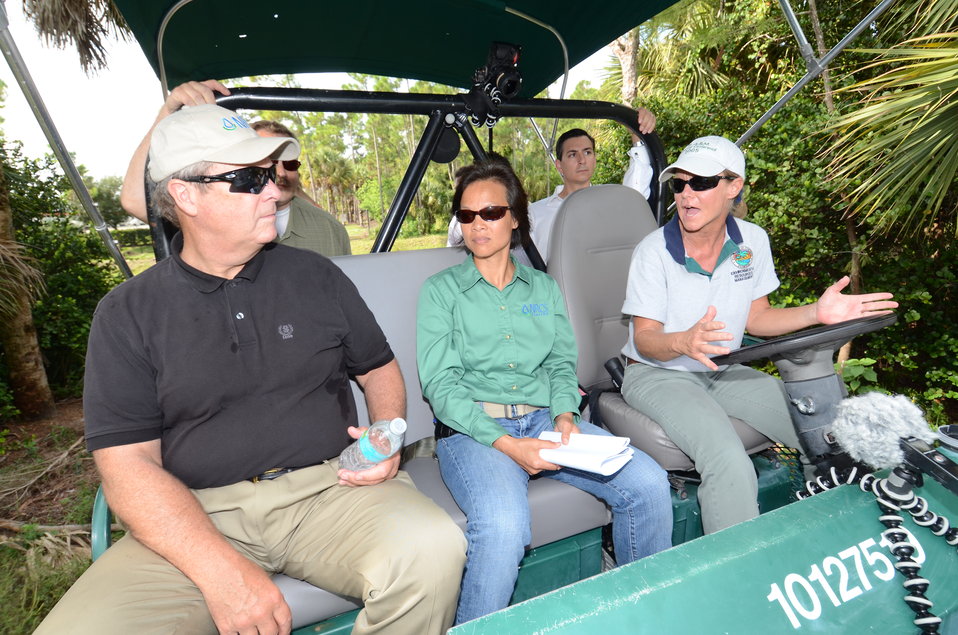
Agriculture Secretary Tom Vilsack rides along with USDA, National Resources Conservation Service Nga Watts and Palm Beach County Board of County Commissioners, Department of Environmental Resource Management, Natural Resources Stewardship Environmental Program Supervisor Brenda Hovde (driving) to see the Winding Waters Natural Area, FL, on Thursday, August 8, 2011.